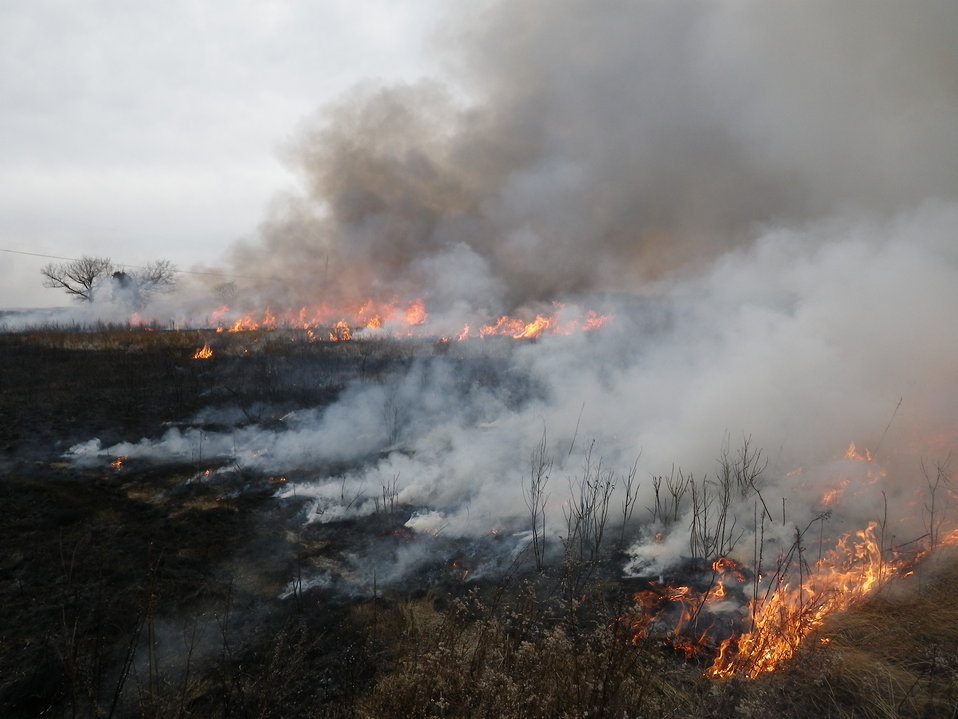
Controlled burn at Eastern Neck National Wildlife Refuge

March, 2011, Eastern Neck National Wildlife Refuge, Maryland: A controlled burn helps promote native species in a brackish marsh on the Delmarva Peninsula east of Chesapeake Bay.